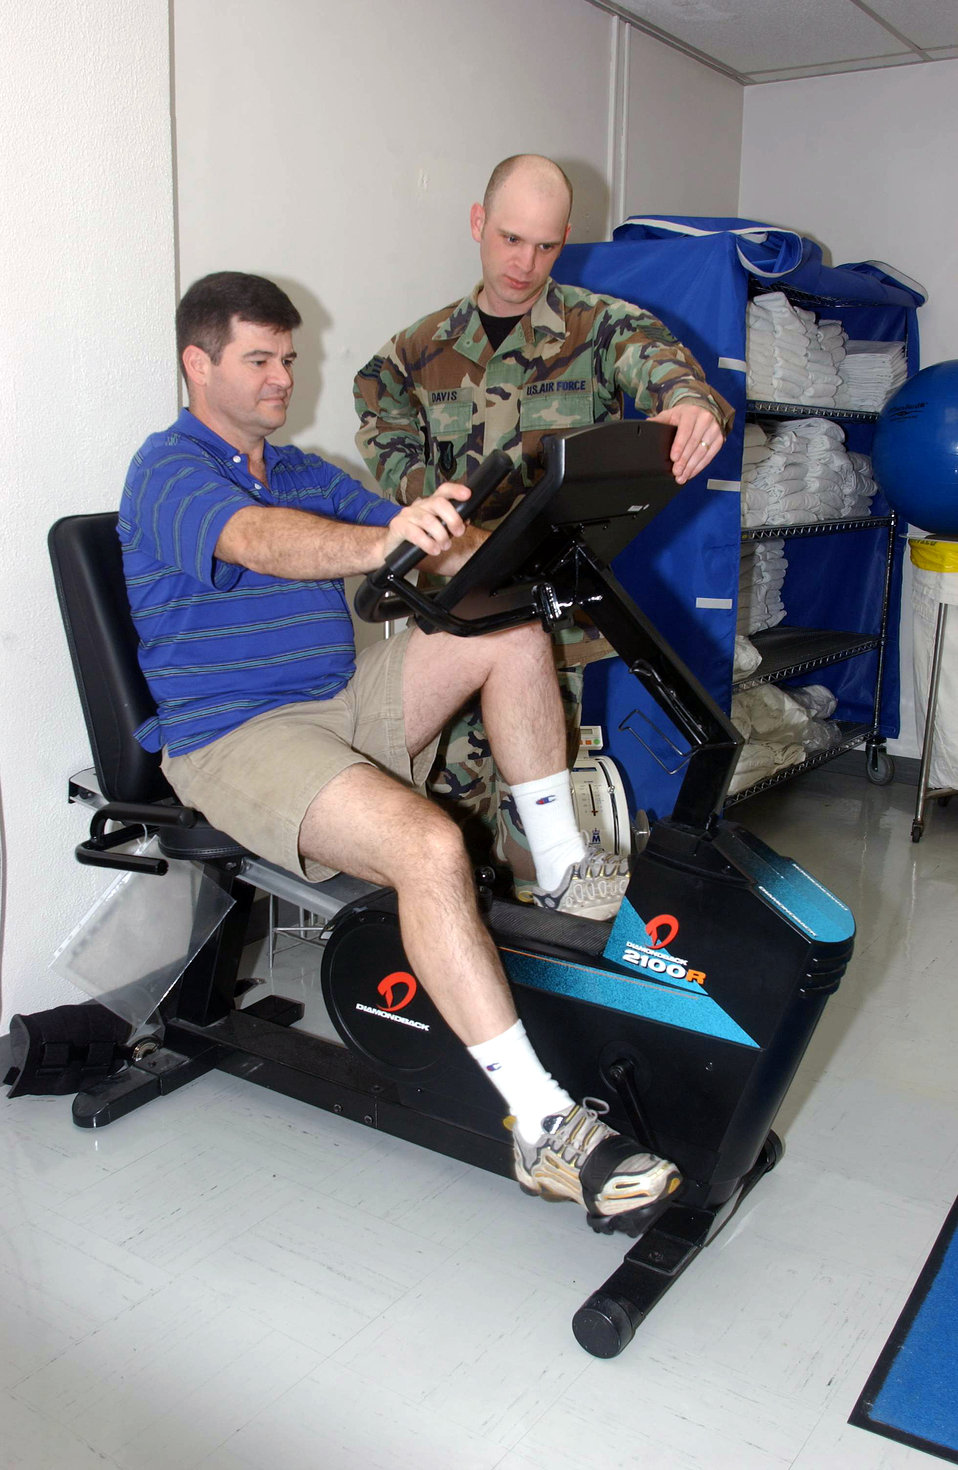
Physical therapy

YOKOTA AIR BASE, Japan -- Staff Sgt Dan Davis observes while Chaplain (Capt.) John Tillery rides a bike during his rehabilitation treatment. Davis is a physical therapy technician from the 374th Medical Group here. The physical therapy element provides services that help restore function, improve mobility, relieve pain and prevent or limit disabilities of thousands of patients each year.